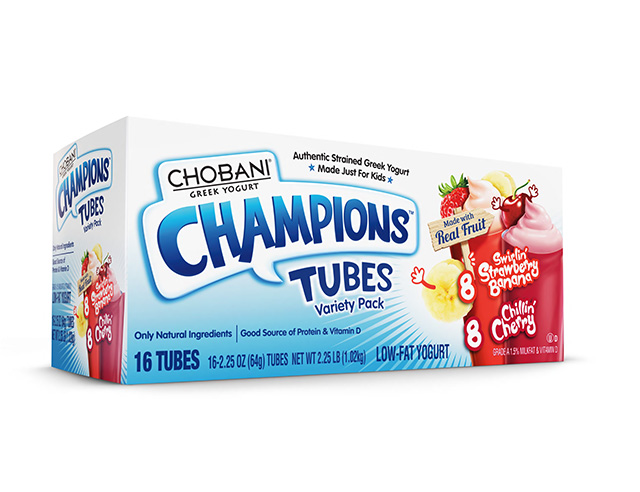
RECALLED – Greek yogurt products

September 6, 2013 – Product Recall – Chobani, Inc. Voluntarily Recalls Greek Yogurt Because of Product Concerns.